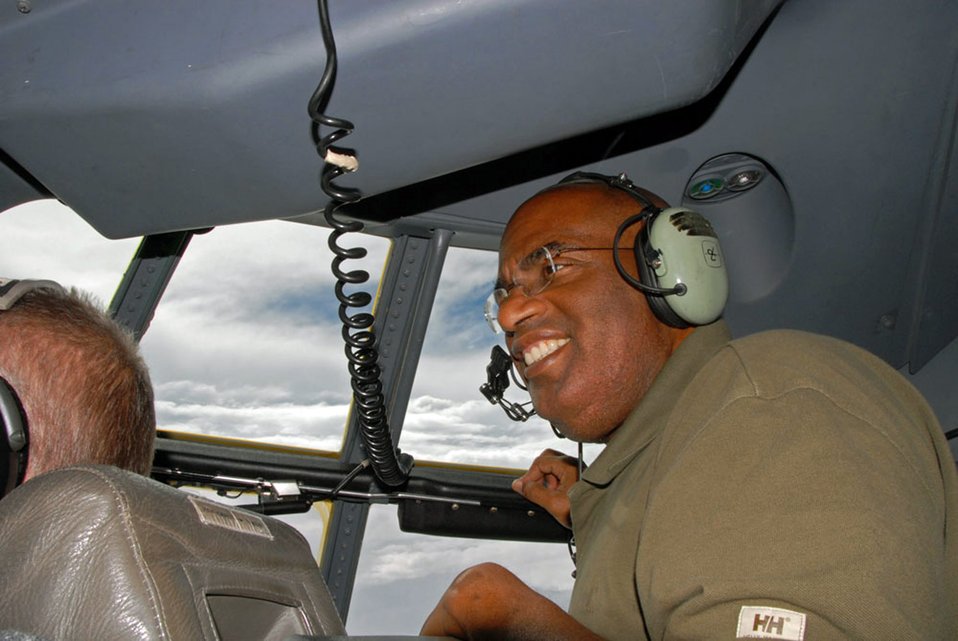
Al Roker flies into Hurricane Dean

Al Roker, weatherman for NBC's